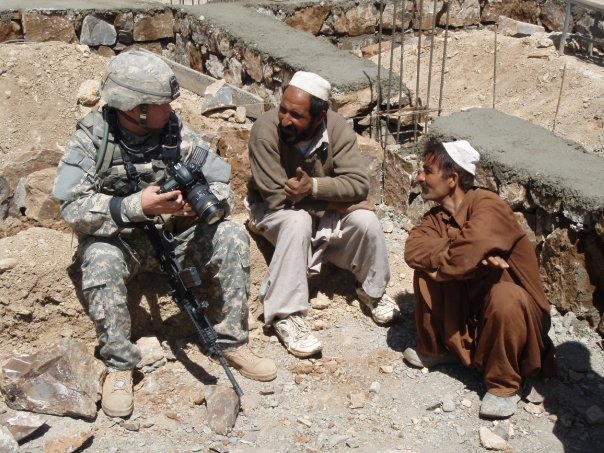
Air Force combat camera team discusses role of media in military

Staff Sgt. Shawn Weismiller talks to Afghan men in 2009. Sergeant Weismiller is an aerial combat photojournalist assigned to the 1st Combat Camera Squadron from Charleston Air Force Base, S.C.